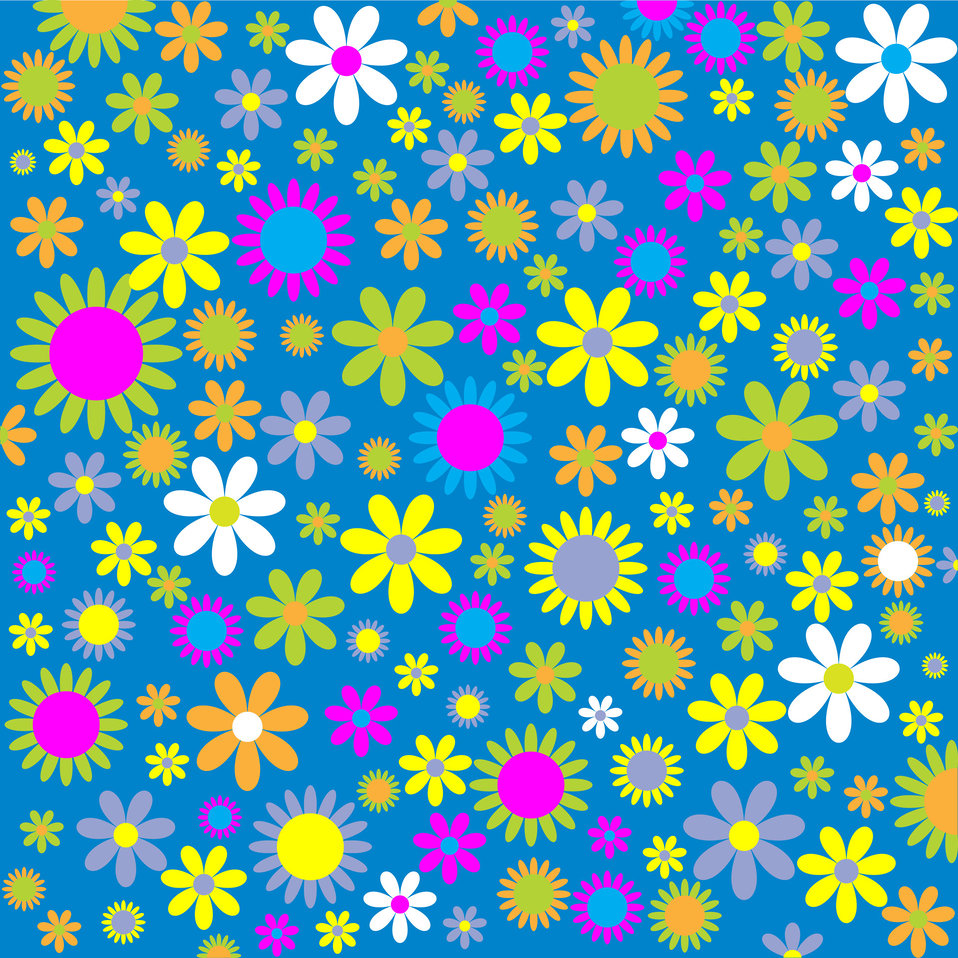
Floral flowers background

Colorful background of floral flowers wallpaper for scrapbooking.